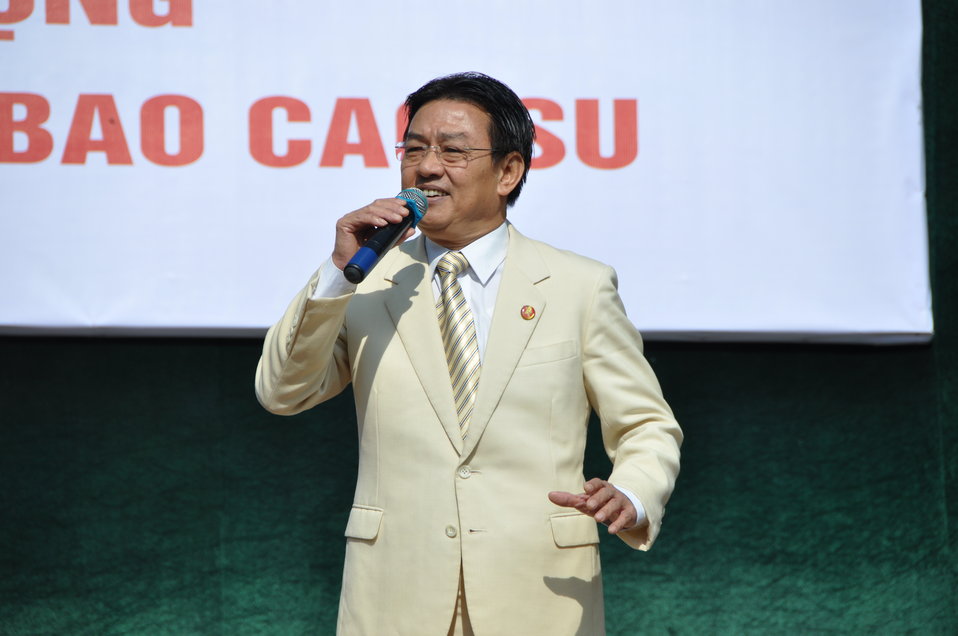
100% Condom Use Campaign Launch, Dec. 2, 2011